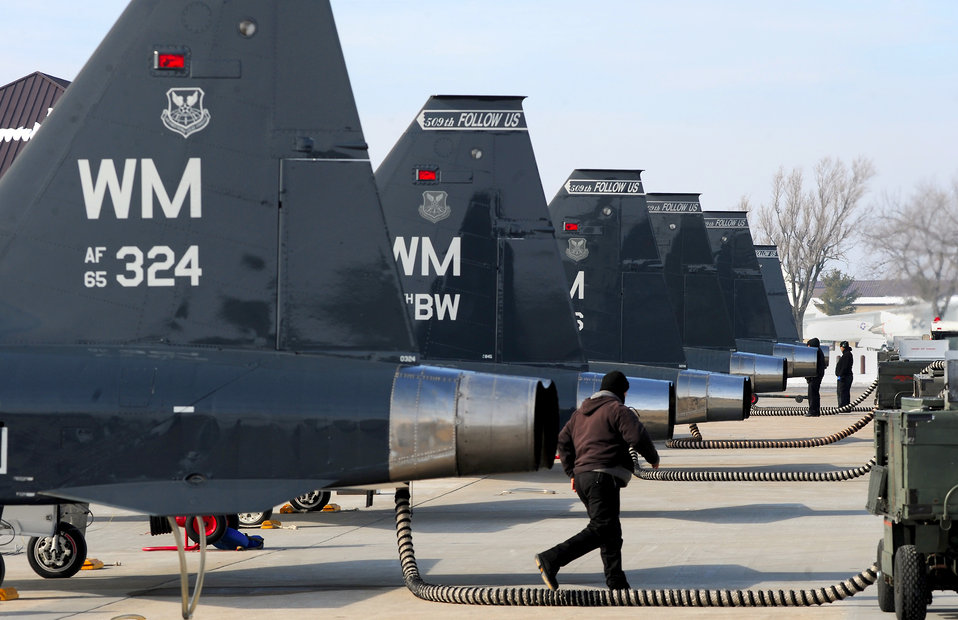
T-38 Talons ready for flight

Maintainers and crew chiefs prepare several T-38 Talons for takeoff Jan. 26, 2011, at Whiteman Air Force Base, Mo.